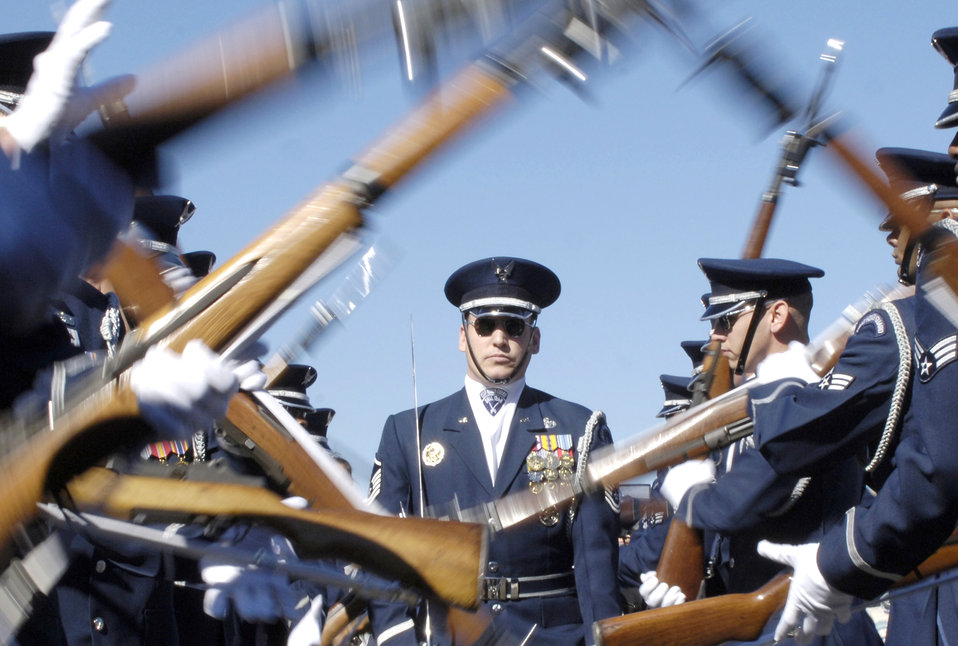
Honor Guard

The U.S. Air Force Honor Guard Drill Team performs during the Air Force open house at the Pentagon Oct. 14. The Honor Guard represents every man and woman in the Air Force, past and present, in ceremonial functions in the nation?s capital.